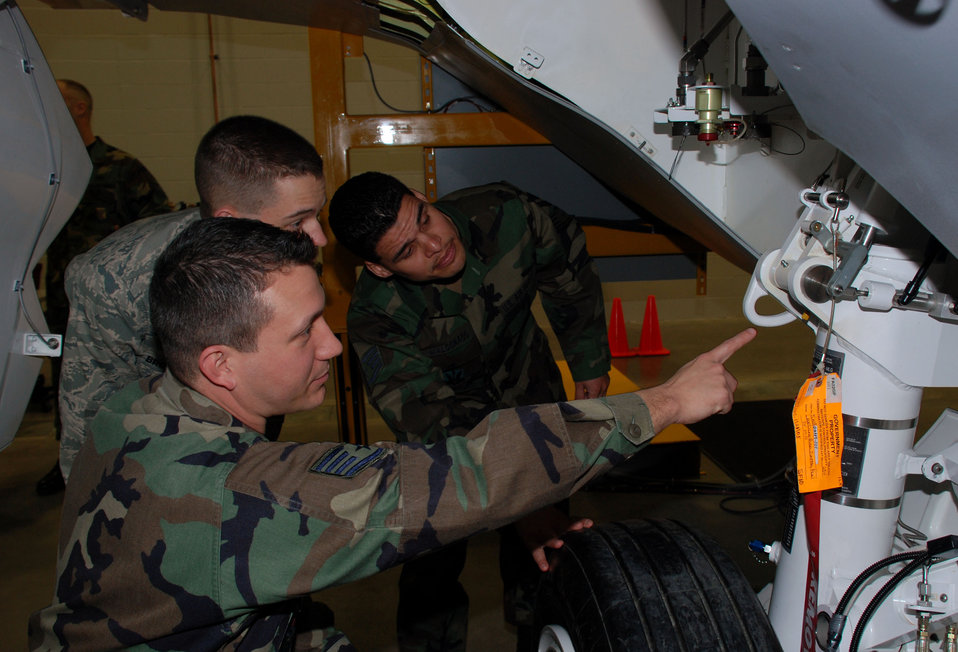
F-22 Raptor crew chiefs begin training

Staff Sgt. Dustin Garcia shows Airman James Brouillard and Staff Sgt. Abiasaph Maldonado an F-22 Raptor fuselage trainer Jan. 29 at Sheppard Air Force Base, Texas. Sergeant Maldonado and Airmen Brouillard are two of the first Airmen to attend the F-22 Raptor Crew Chief training course in the new Raptor Maintenance Training Facility. Sergeant Garcia is a course instructor with the 362nd Training Squadron.